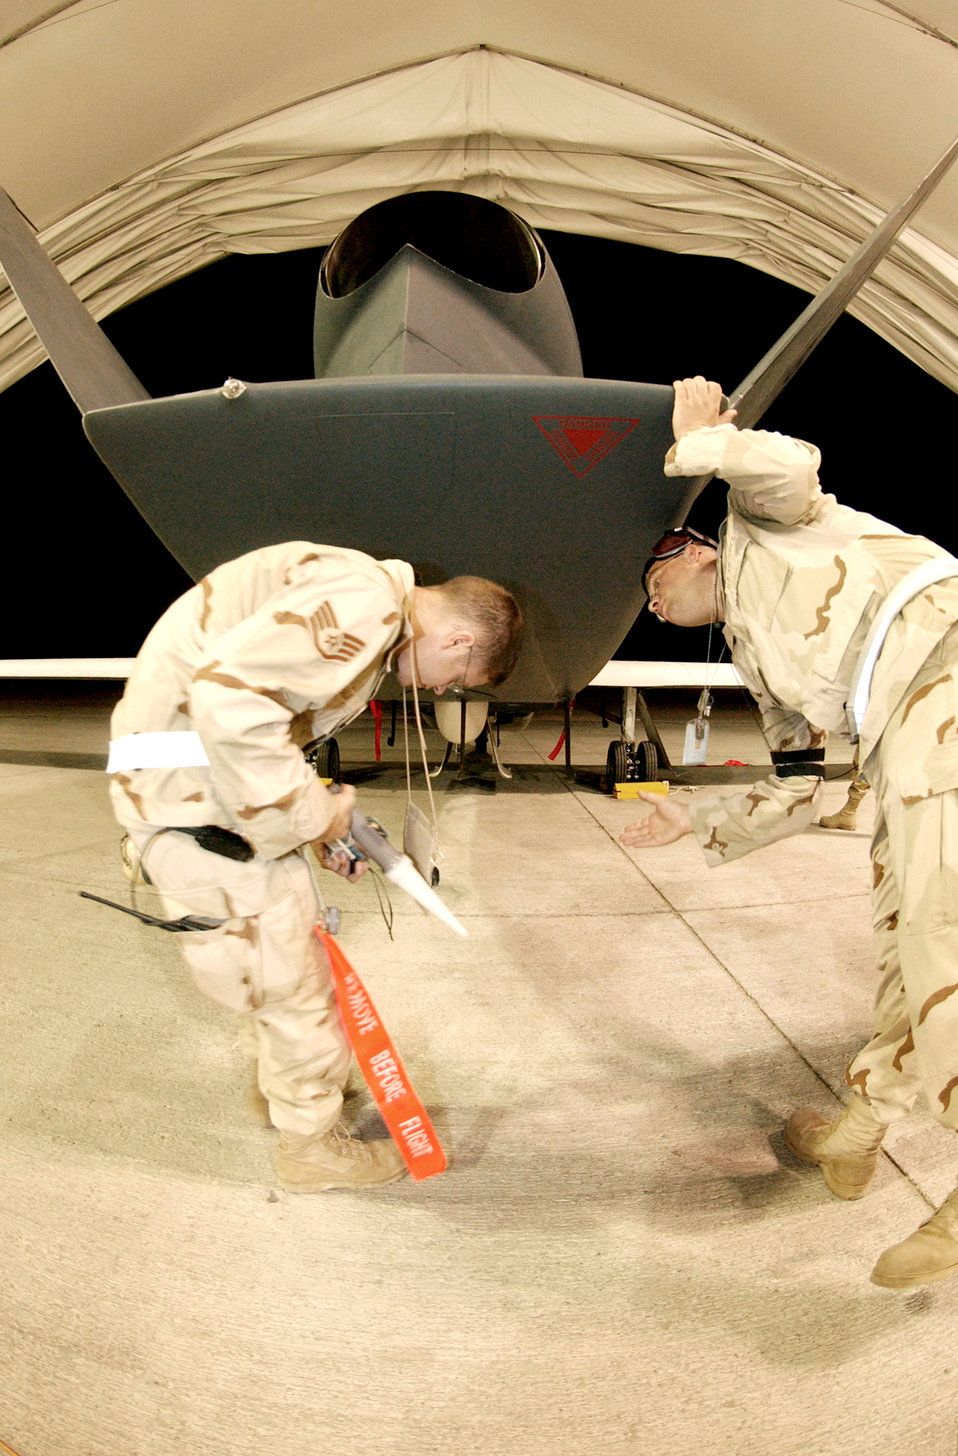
Pilots make long commute to Global Hawk University

SOUTHWEST ASIA -- Staff Sgt. Sean Haugan and Staff Sgt. Brian Fox examine a Global Hawk unmanned aerial vehicle just before launch. The Airmen are deployed to the 380th Expeditionary Aircraft Maintenance Squadron.